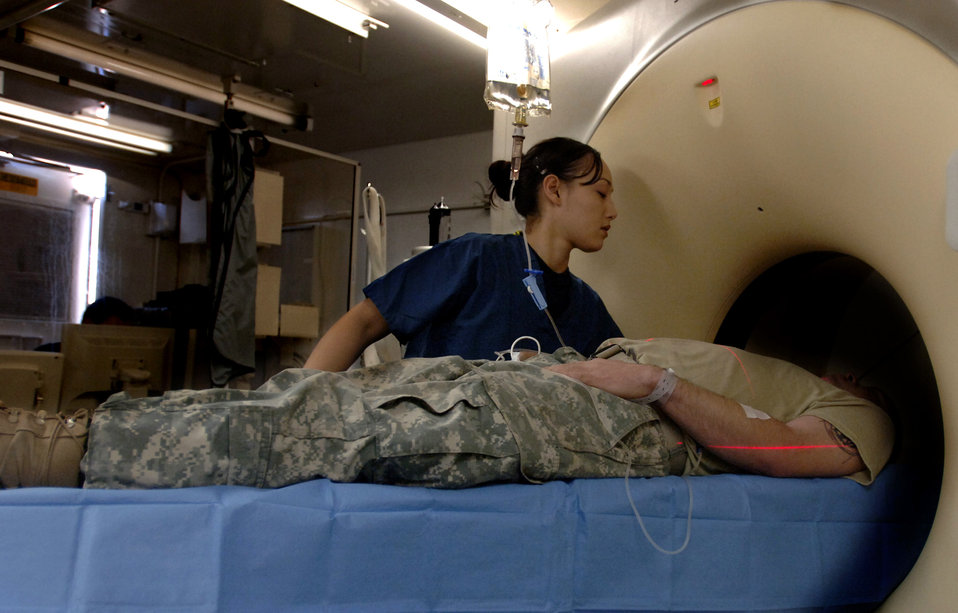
Radiology staff provides reliable, rapid response in Iraq

Staff Sgt. Asia Tucker prepares a patient for a CT scan at the Air Force Theater Hospital Feb. 19 at Balad Air Base, Iraq. The radiology staff has two new 16 slice CT scanners that expedite the process from 90 minutes to about 10 minutes. Sergeant Tucker is a diagnostic imaging specialist assigned to the 332nd Expeditionary Medical Group.